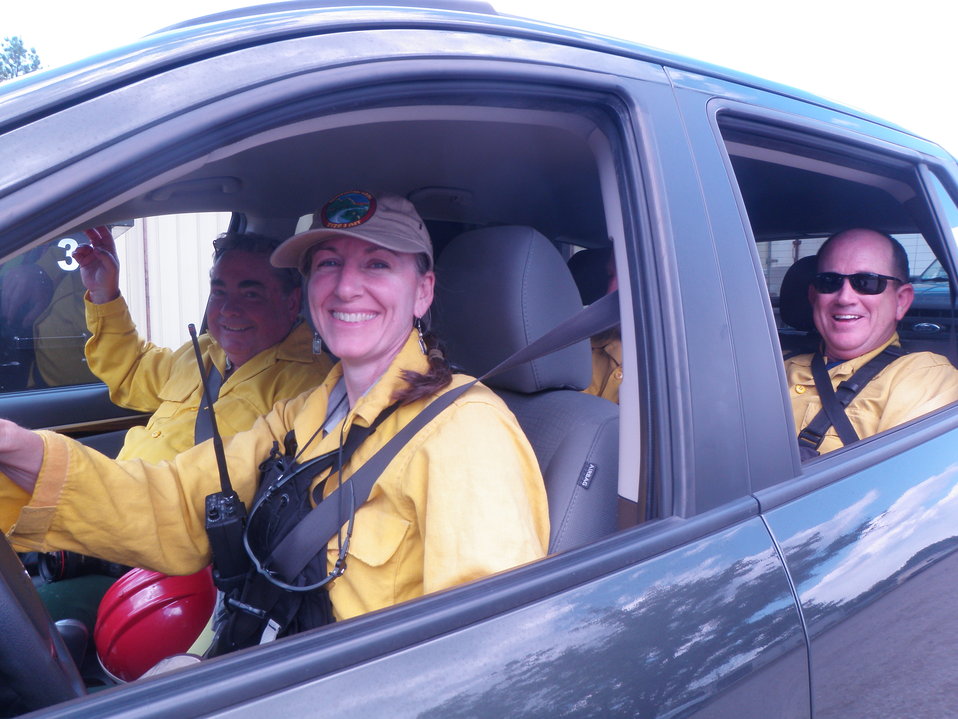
Info Officer at work

Suffolk, VA, 2011: Fire Information Officer Catherine Hibbard of the U.S. Fish and Wildlife Service takes a car full of media to the fireline at the Lateral West Fire burning on Great Dismal Swamp National Wildlife Refuge.